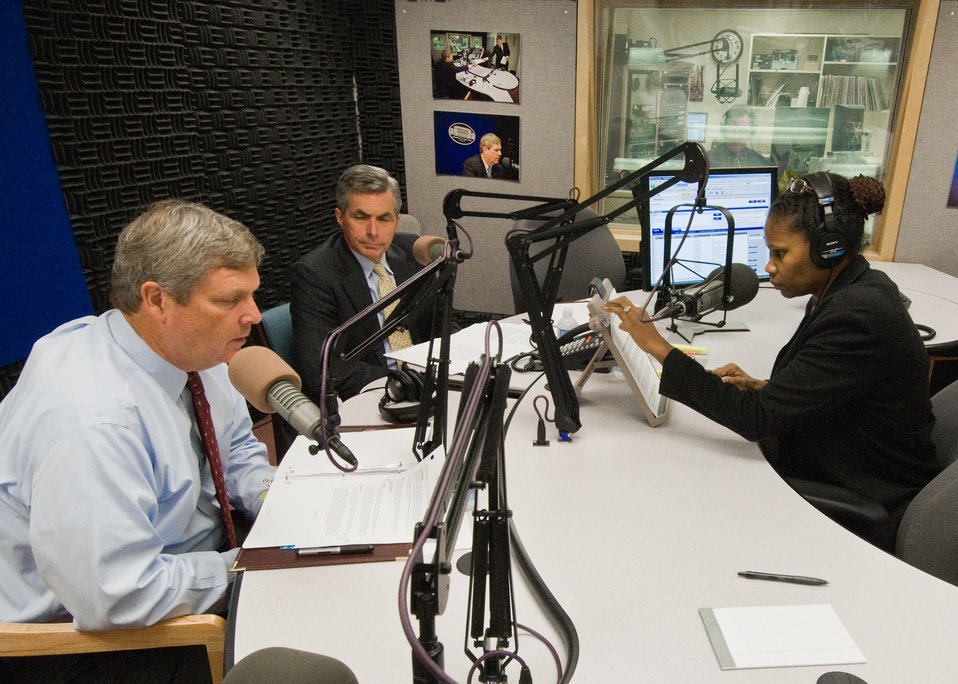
Agriculture Secretary Tom Vilsack (left), Rear Admiral James A. Barnett, Jr. (center) and Susan Carter, USDA, Broadcast Media and Technology Services during a media conference speaking on behalf of the national security group MISSION: READINESS to urge Congress to pass legislation that will help remove junk food from schools, improve nutritional standards and provide more children greater access to healthy foods. More than 100 retired generals and admirals will release a letter to Congress, Tuesday, September 21, 2010 asking them to move before September 30 to pass a child nutrition bill to help reduce child obesity and expand the pool of young adults qualified for military service. USDA Photo 10di1499-17 by Bob Nichols.